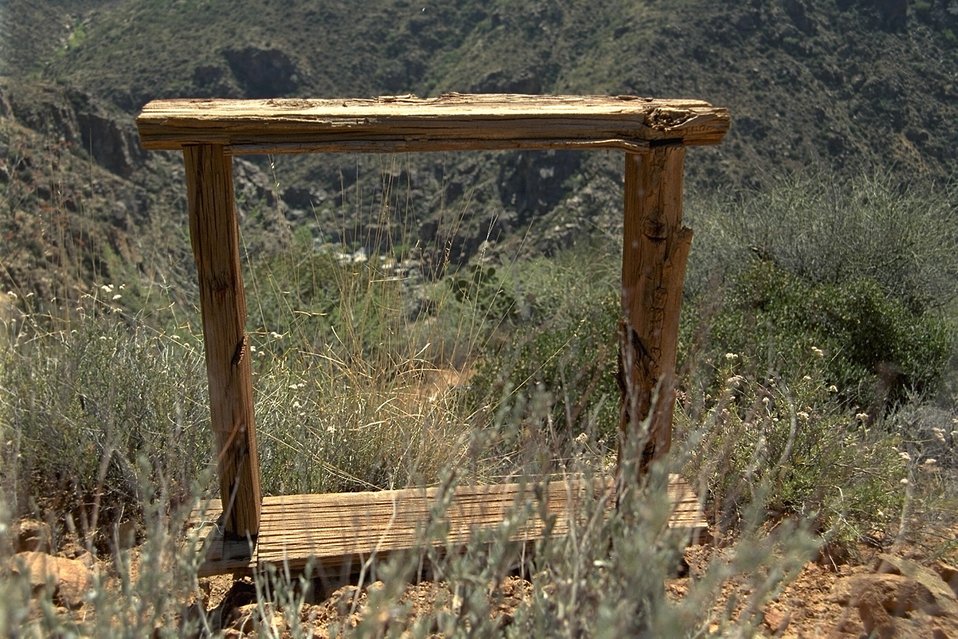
A wood structure left over at the Richinbar Mine site.